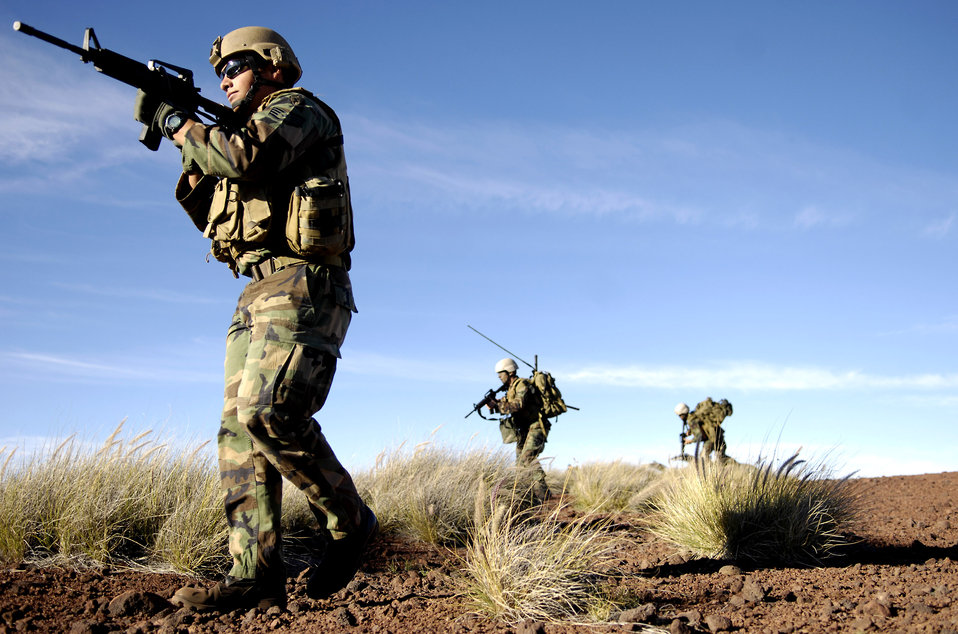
TACPs participate in excercise

Staff Sgt. George Earhart takes point while training his Airmen on patrol tactics Oct. 23 at the Pohakuloa Training Area on the big island of Hawaii. The Airmen are tactical air control party members from the 25th Air Support Operations Squadron, Wheeler Army Airfield, Hawaii. The TACPs are training as part of the Koa Lighting exercise where bombers fly from Guam and practice their targeting.